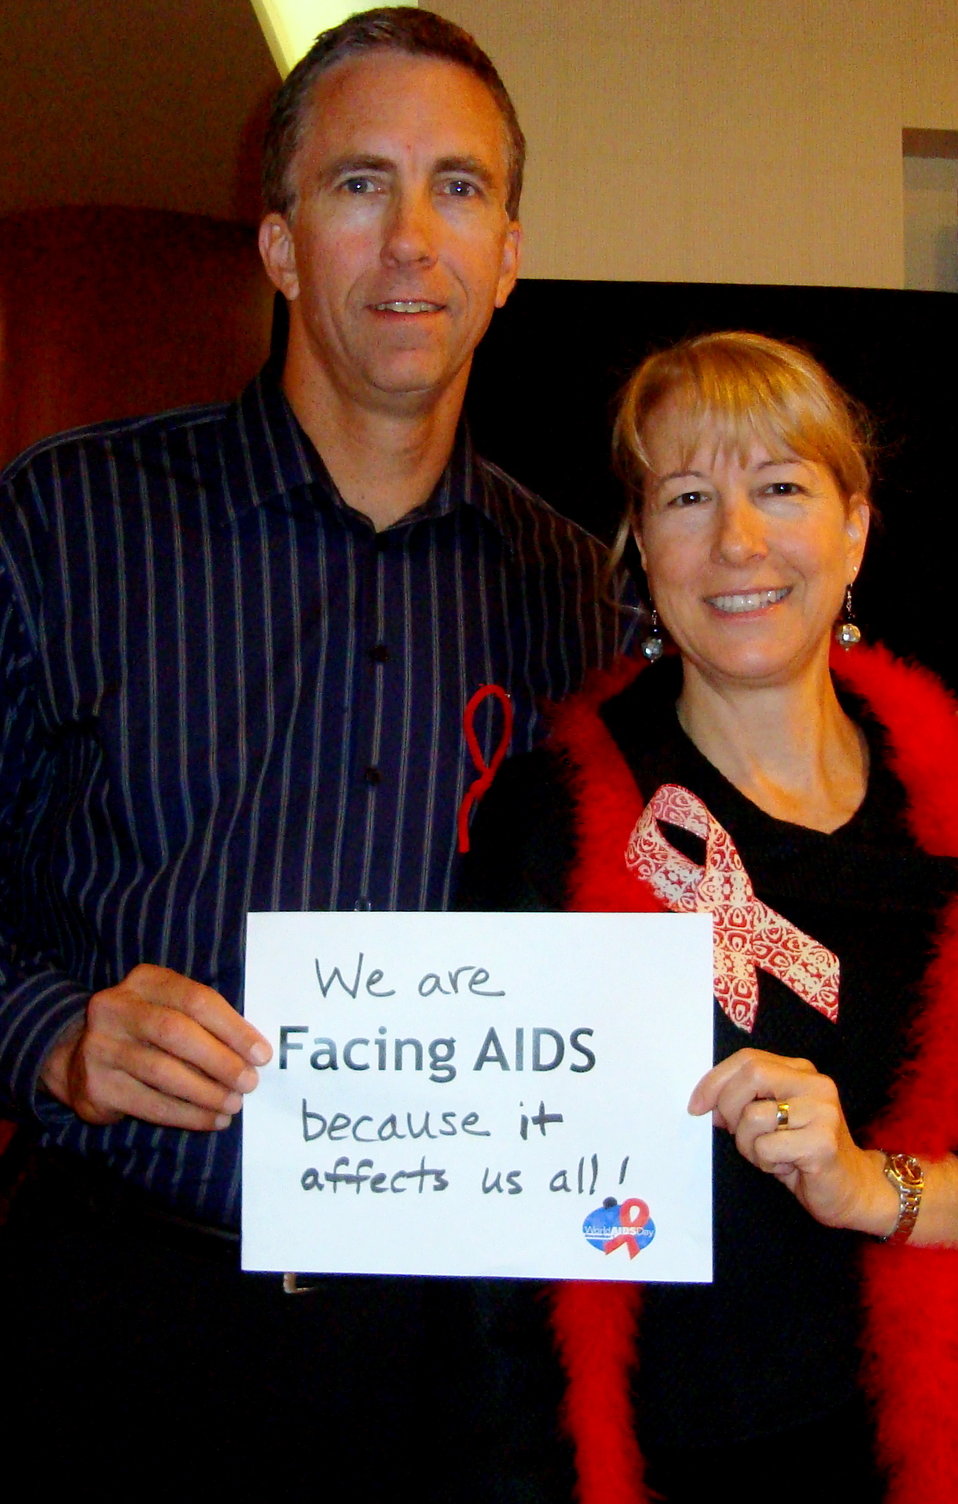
FacingAIDSCampaign 004